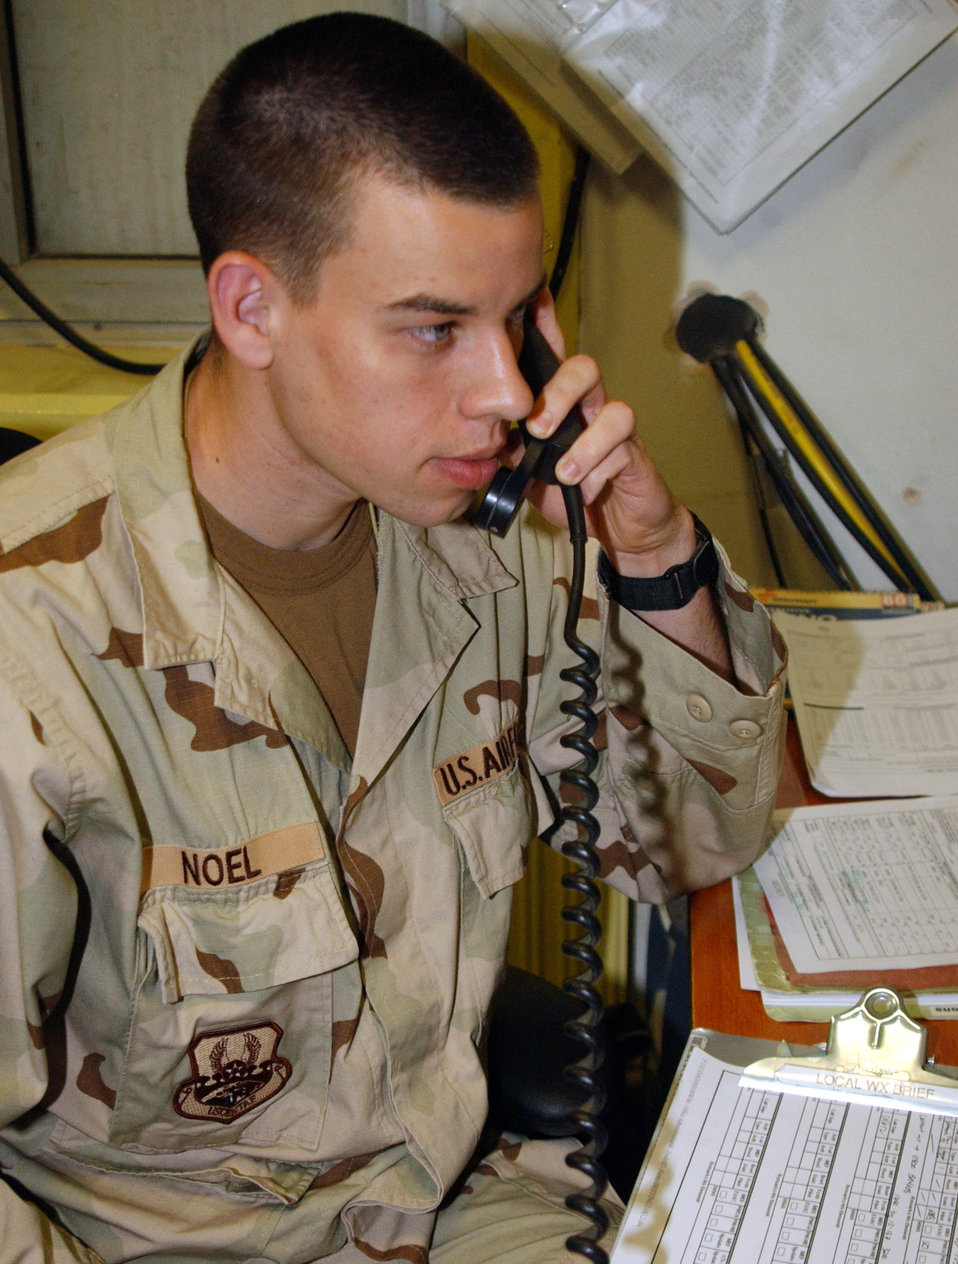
Balad combat weather flight ensures safe travel

Staff Sgt. Jason Noel provides the most up to date weather conditions for aircrew Oct. 16 at Balad Air Base, Iraq. Sergeant Noel is a combat weather forecaster assigned to the 332nd Expeditionary Operations Support Squadron and is deployed from Offutt Air Force Base, Neb.